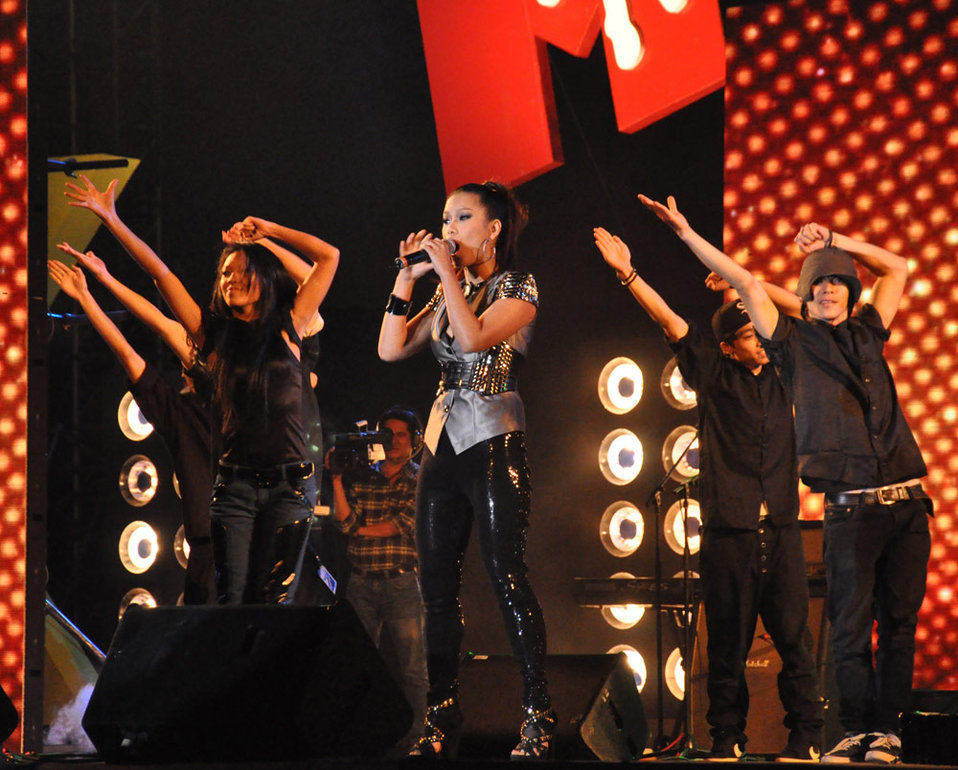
MTV EXIT Hanoi concert March 27, 2010